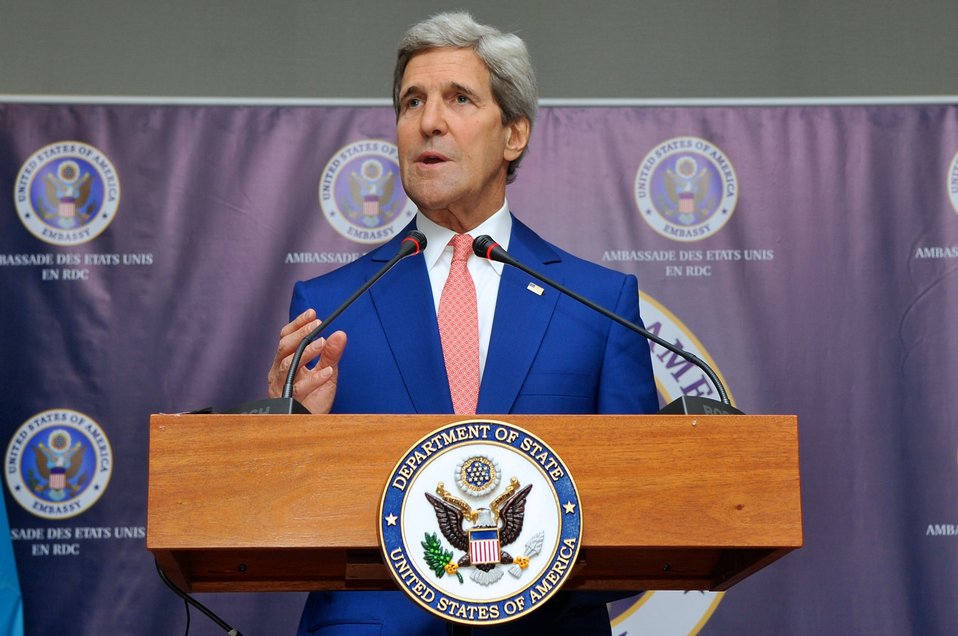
Secretary Kerry Addresses Reporters After Meeting With President Kabila of Democratic Republic of Congo

U.S. Secretary of State John Kerry addresses reporters during a news conference that followed his meeting with Democratic Republic of Congo President Joseph Kabila in Kinshasa on May 4, 2014.